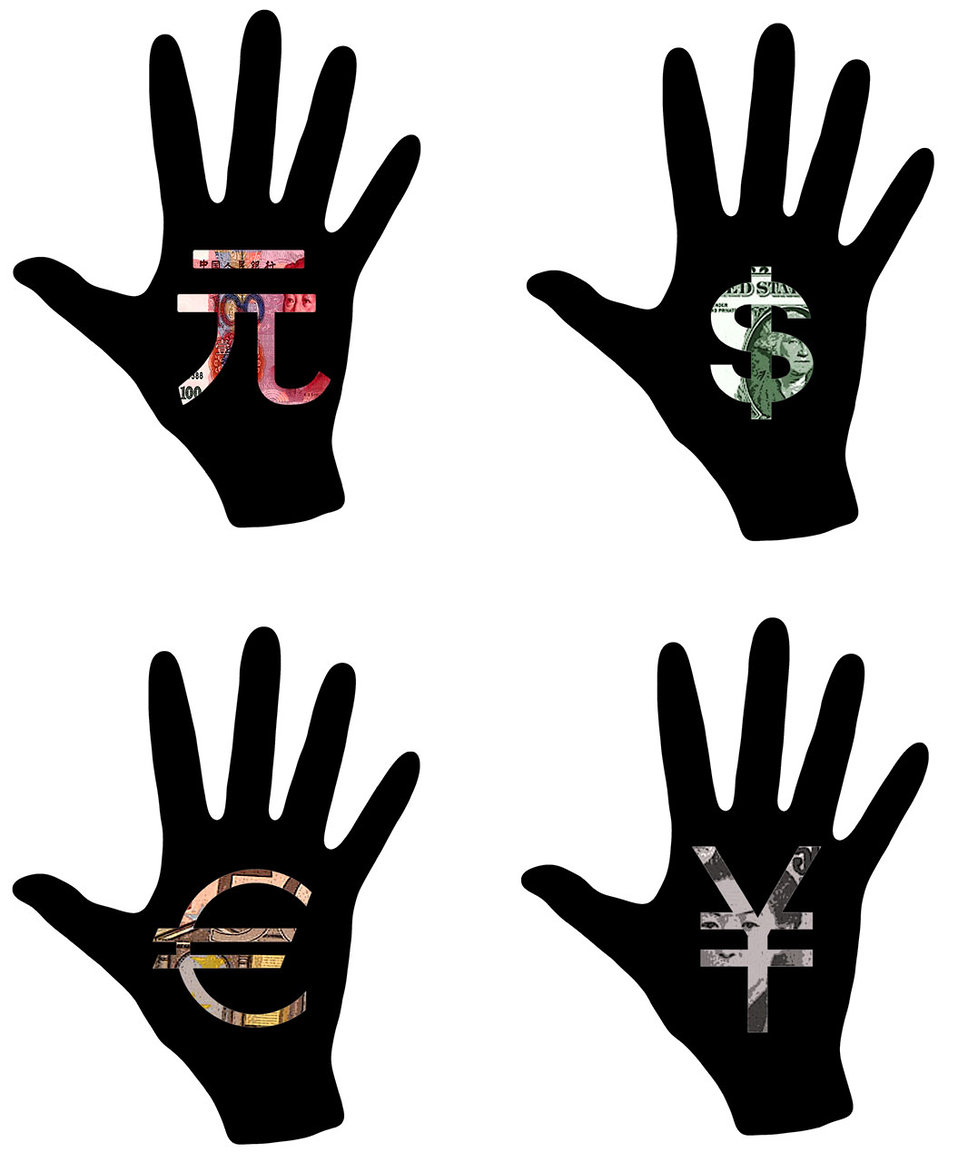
Money hands

Hand silhouette with different currencies.